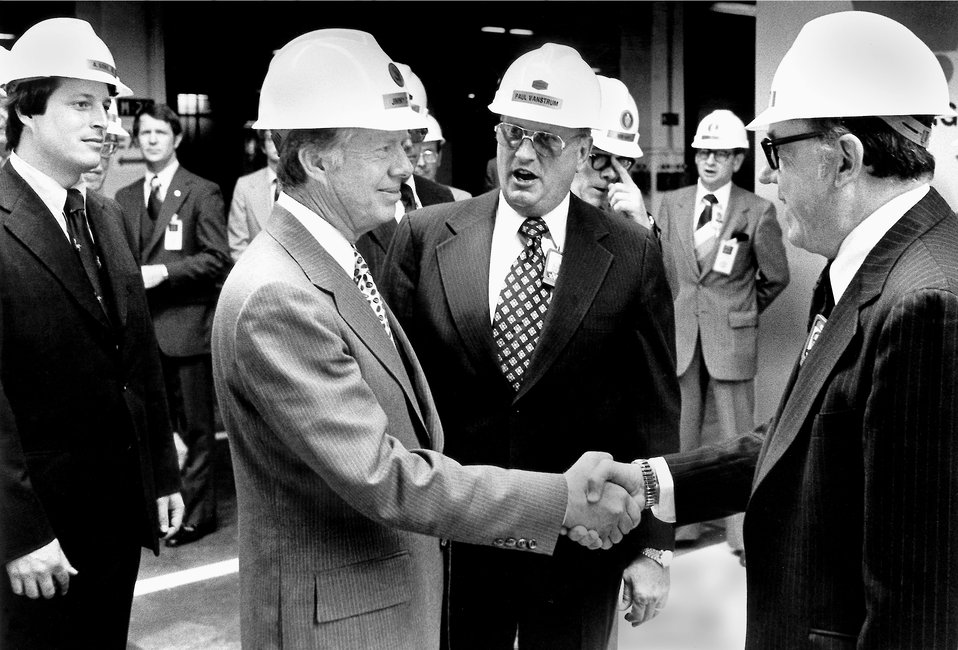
Pres. Jimmy Carter with Bill Wilcox Oak Ridge 1978

78-306b DOE photo Frank Hoffman 5-22-1978 K-25 Oak Ridge Tennessee